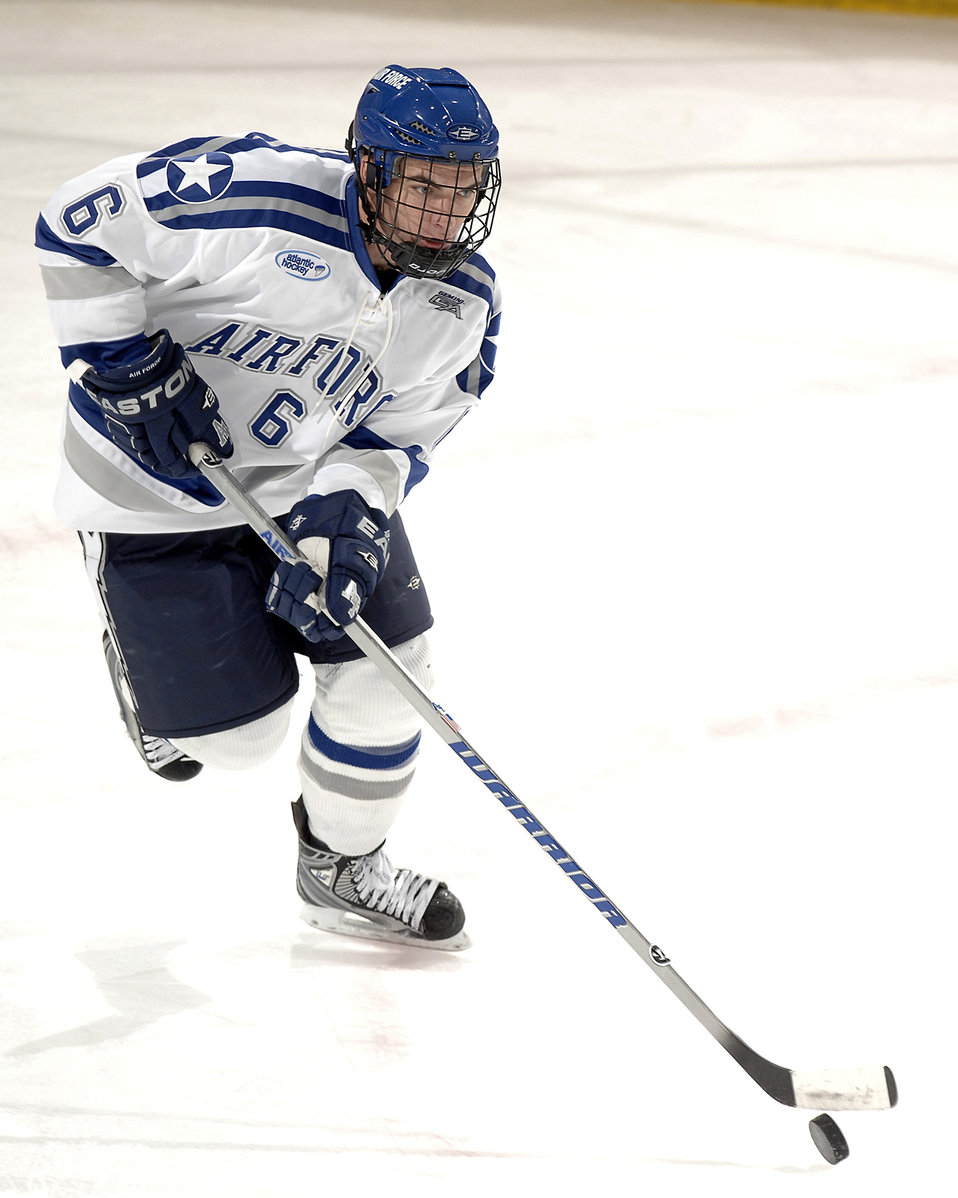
Falcons defeat the Pronghorns

Air Force Academy freshman Adam McKenzie drives the puck during a hockey exhibition game against the University of Lethbridge Oct. 4, 2010, at the Cadet Ice Arena in Colorado Springs, Colo. The Falcons defeated the Pronghorns 4-3 in overtime on a goal by McKenzie with 47.3 seconds left in the game.